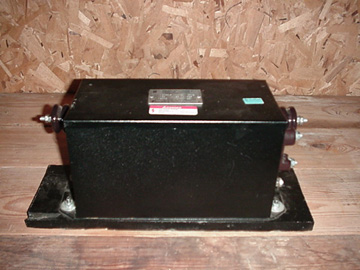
This is a photograph that I took of my 12kV, 60mA neon sign transformer.